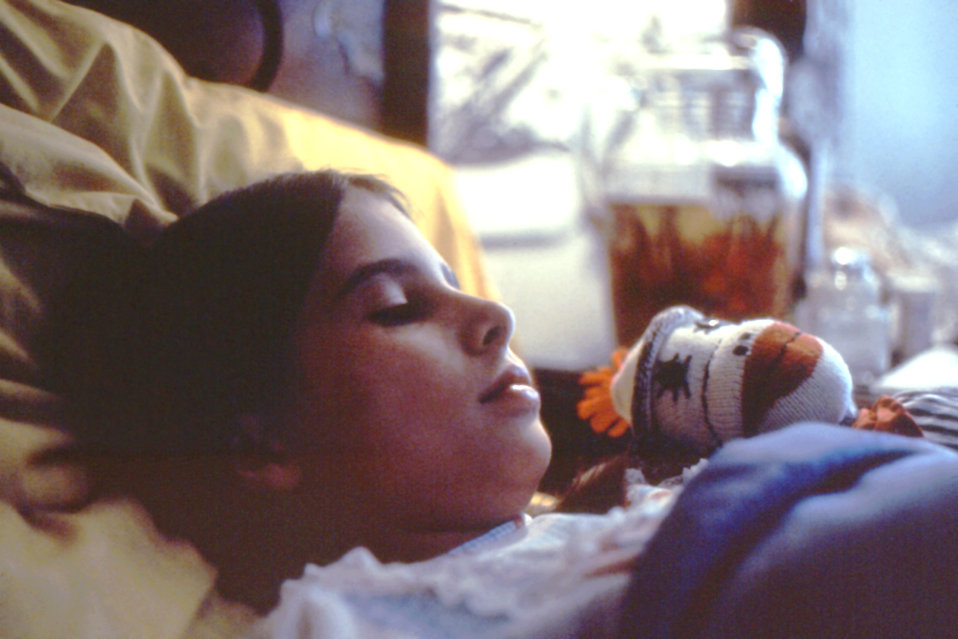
This child is shown suffering from symptoms caused by a common cold virus.